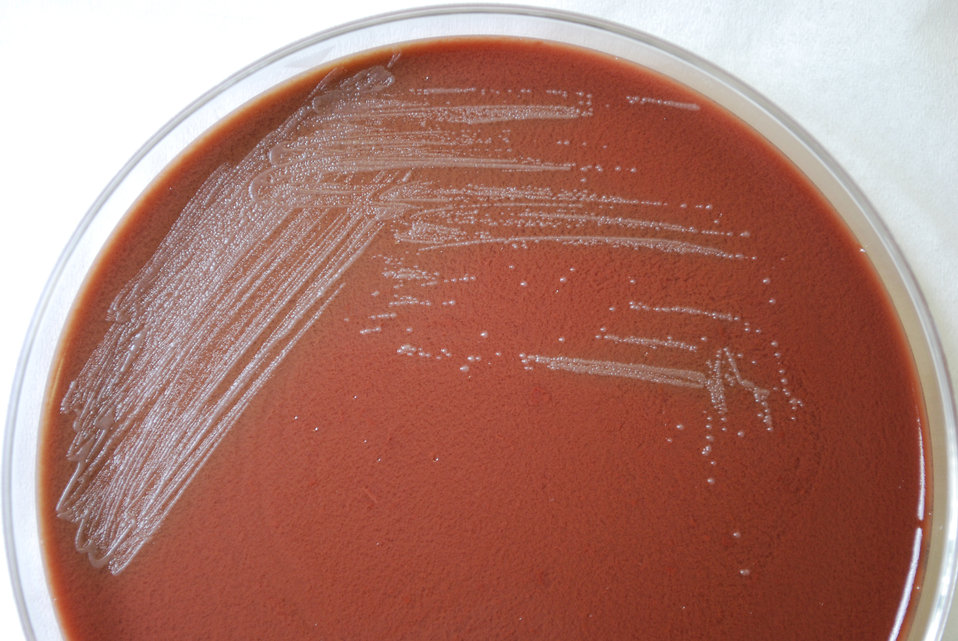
As a closer view of PHIL 12224, this photograph depicts the colonial morphology displayed by Gram-negative Yersinia pestis bacteria, which was grown on a medium of chocolate agar, for a 48 hour time period, at a temperature of 25�C.